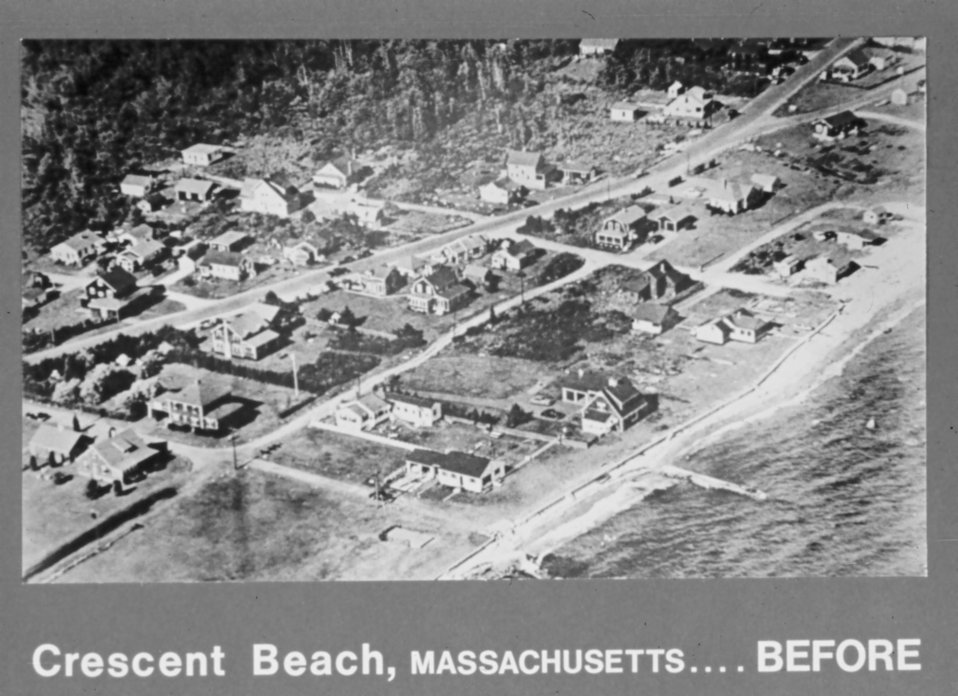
Beach-front community prior to Hurricane Carol